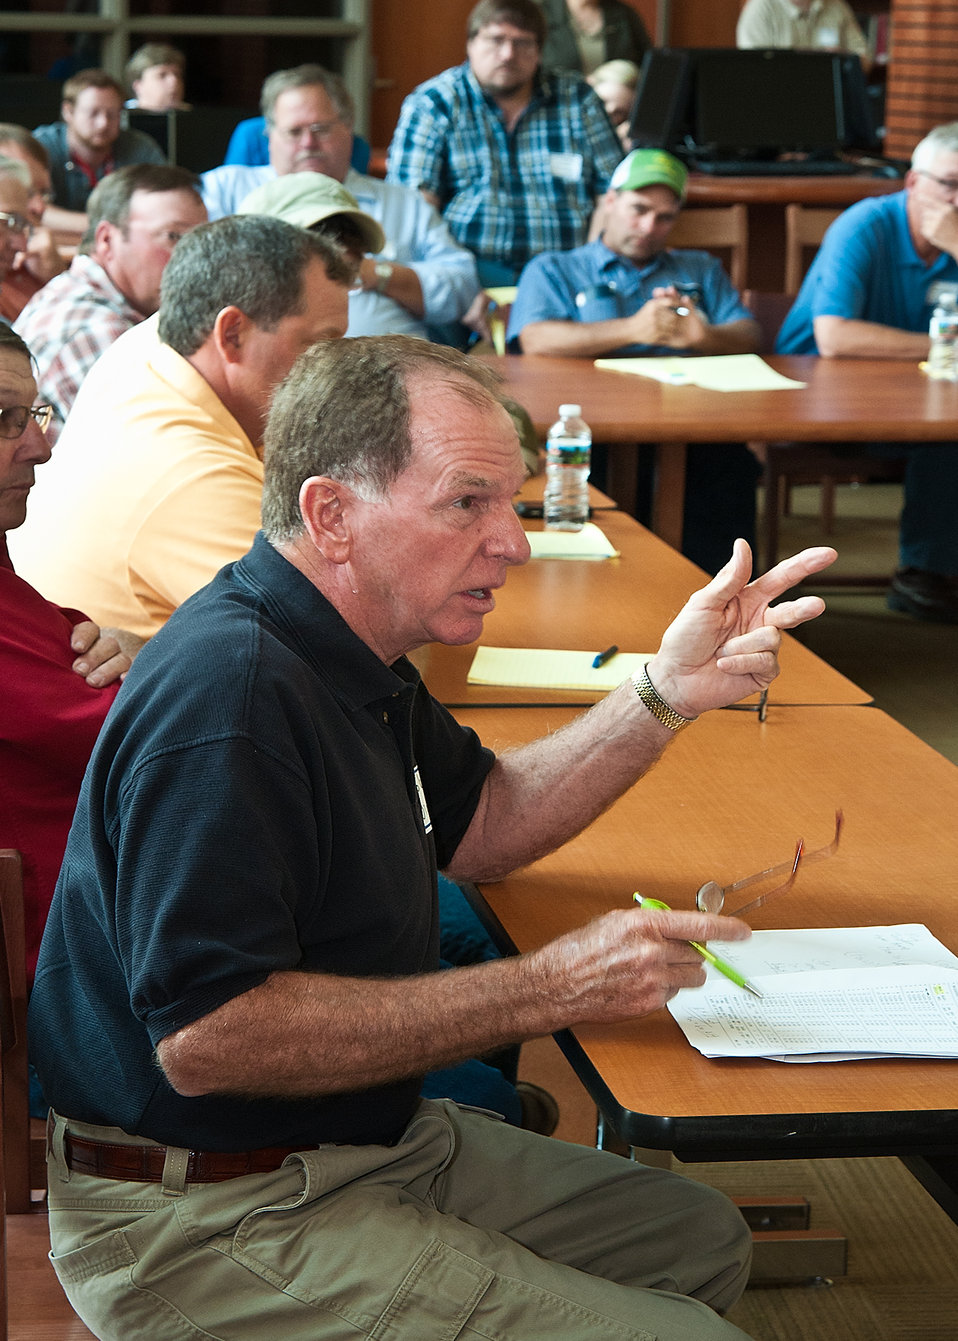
Bob Dickinson questions Agriculture Secretary Tom Vilsack during a town hall meeting at the Glenwood Community High School in Glenwood, Iowa on Thursday, June 16, 2011. Farmers, local and regional media listened and questioned Secretary Vilsack on the cause of the floodwaters along the Missouri River affecting Iowa and Nebraska. Secretary Vilsack offered advice and assistance available through the United States Department of Agriculture and other federal agencies.